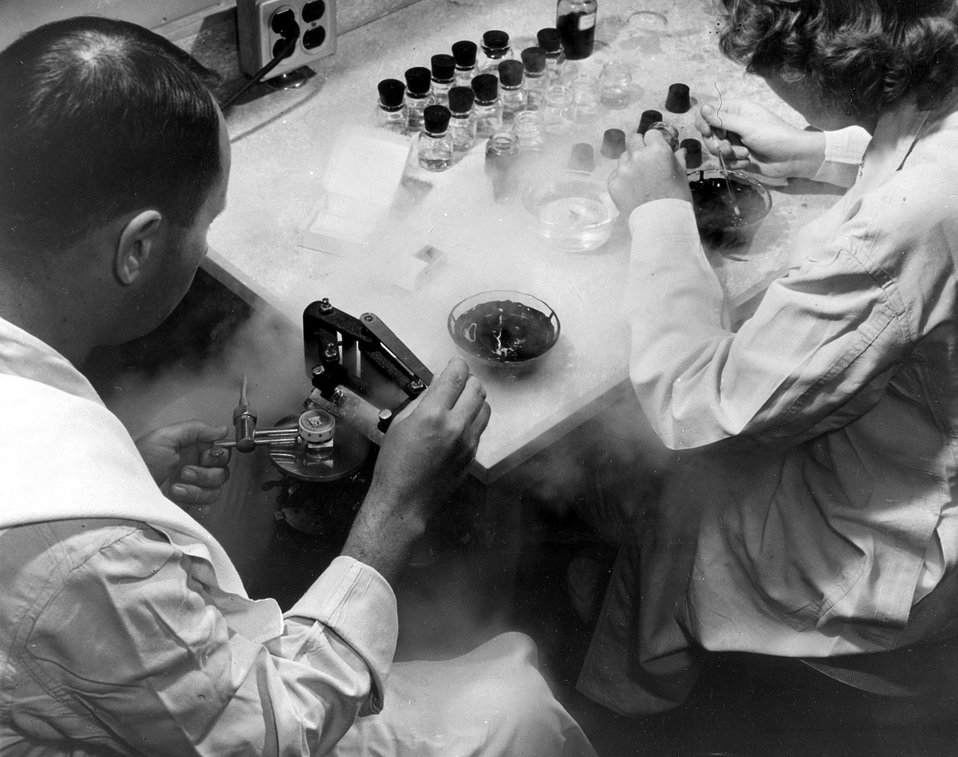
Standard equipment in many pathology laboratories includes a freezing microtome, such as this one. c. 1954